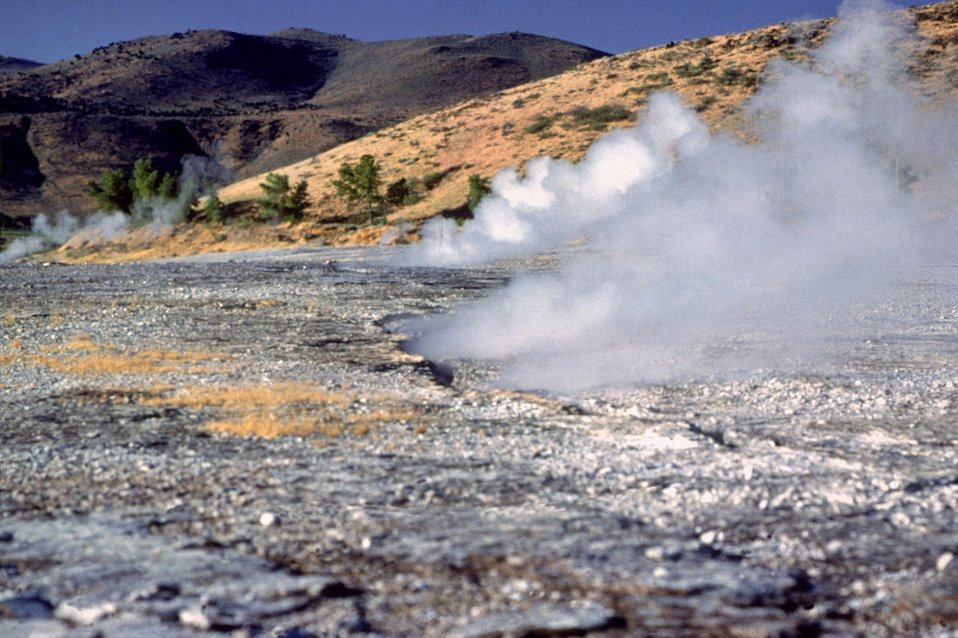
A VIEW OF HOT SPRINGS LOCATED IN THE STEAMBOAT SPRINGS AREA OF NEVADA.

THE STEAMBOAT HILLS GEOTHERMAL POWER PLANT IS LOCATED IN THE STEAMBOAT SPRINGS, NEVADA AREA.